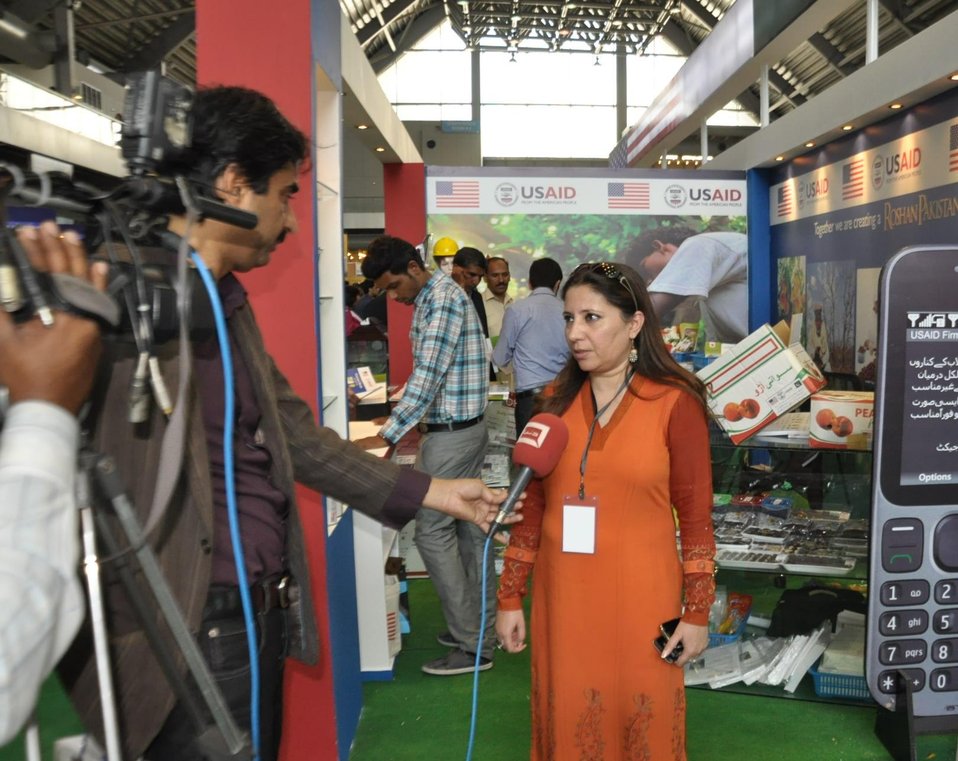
USAID Firms Project at the Dawn Agri Expo 2014

Ms. Kanwal Bokharey, Economic Growth Adviser Pakistan, speaking to the Media at the Dawn Agri Expo 2014